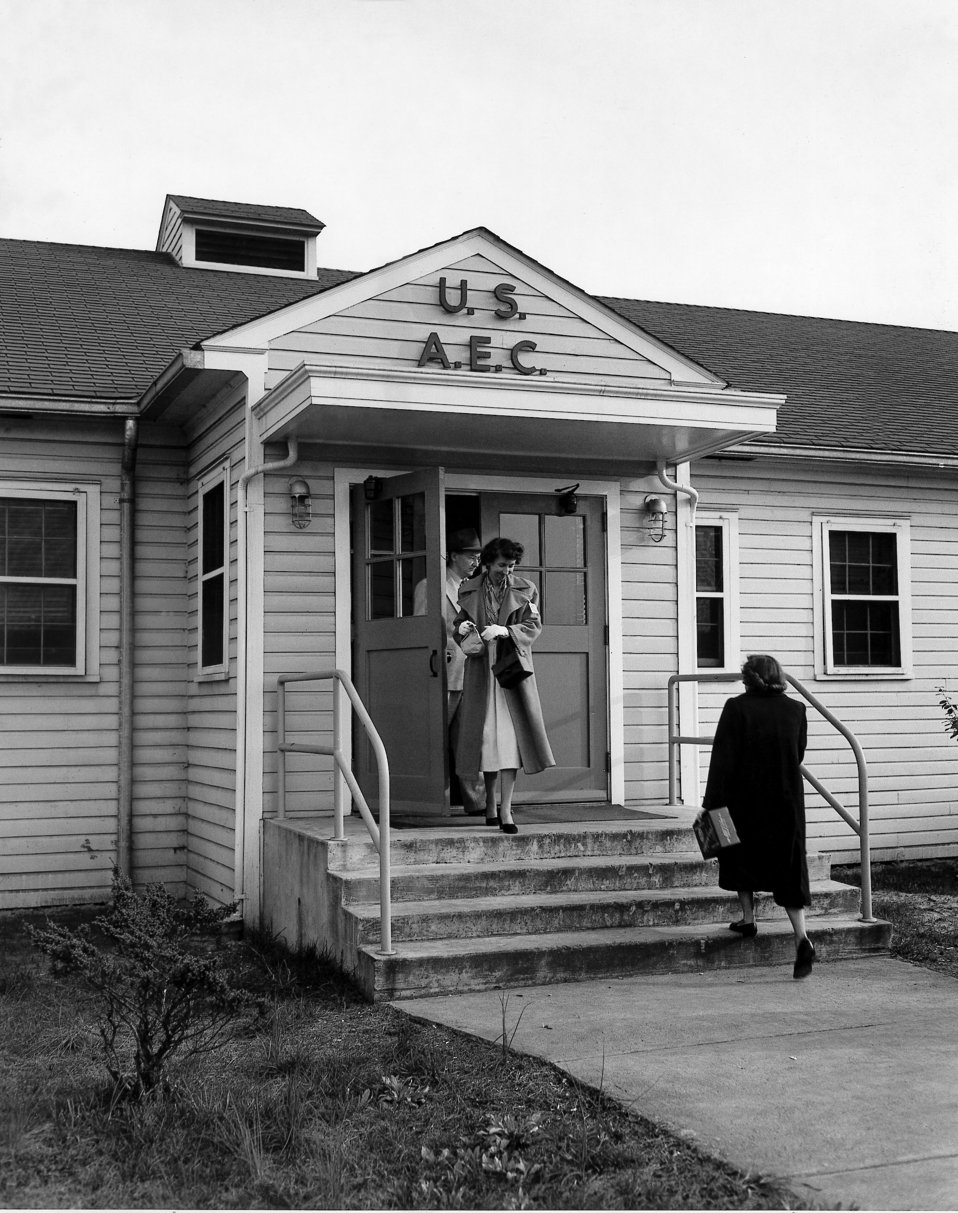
Adm. Blg. AEC Oak Ridge

7922 DOE Photo Ed Westcott 3/17/52
Oak Ridge Tennessee